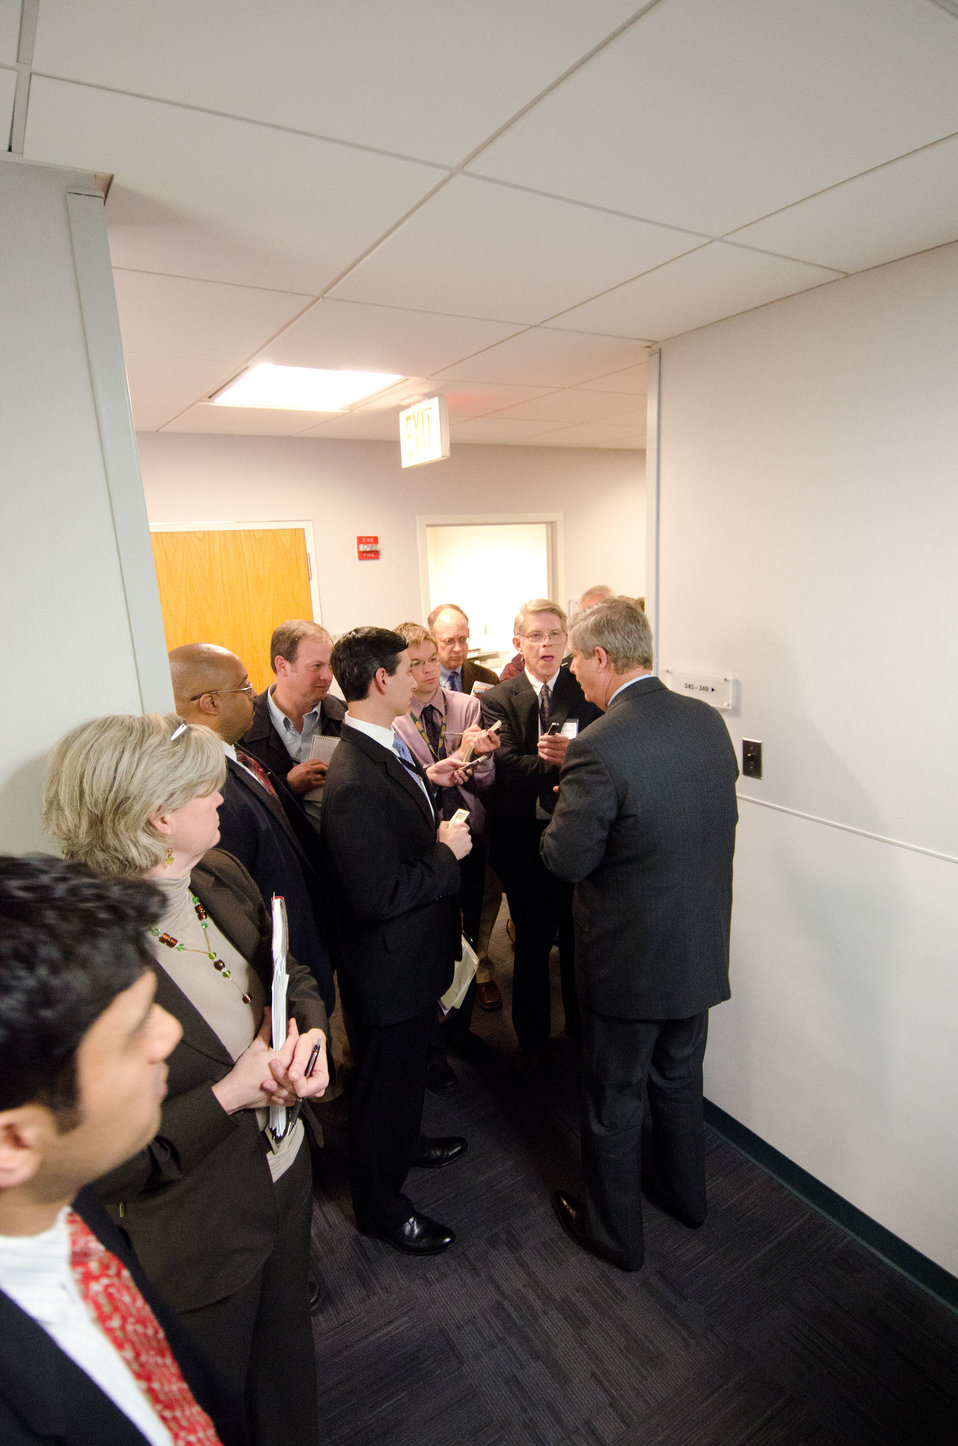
U.S. Department of Agriculture Secretary Tom Vilsack spoke at the Organic Trade Association’s 2011 Policy Conference at the Hall of States, on Wednesday, April 6, 2011 in Washington, DC.